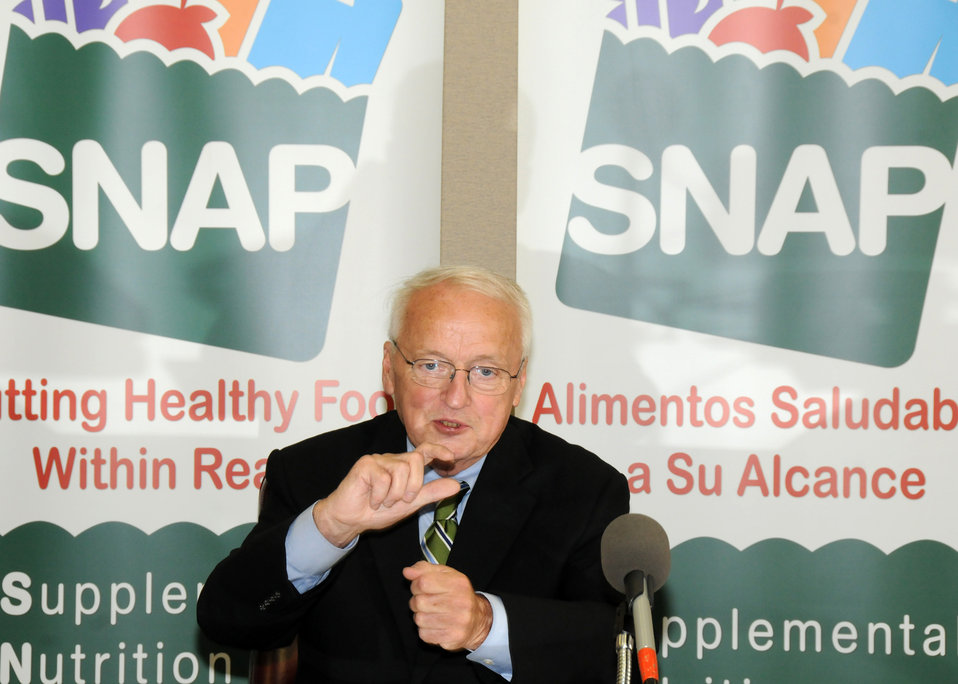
Agriculture Under Secretary for Food, Nutrition and Consumer Services Kevin Concannon unveiled the new sign for the Supplemental Nutrition Assistance Program (SNAP) “We Welcome SNAP Benefits” and announced the premier of the SNAP Retail Locator web tool at the Department of Agriculture, in Washington D.C., on Wednesday, May 13, 2010. USDA photo 10di1363-48